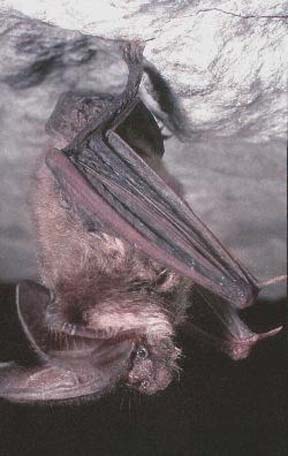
Bat, Ozark big-eared (A075).